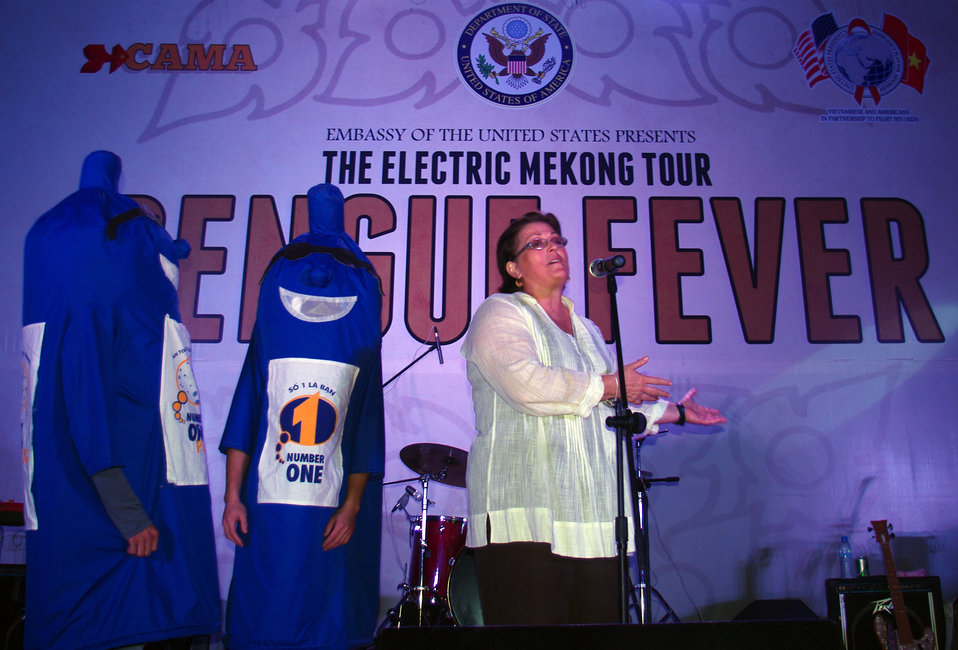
PEPFAR, U.S. Embassy Host Dengue Fever Concert in Hanoi

U.S. Embassy Deputy Chief of Mission Claire Pierangelo introduces the Dengue Fever band.